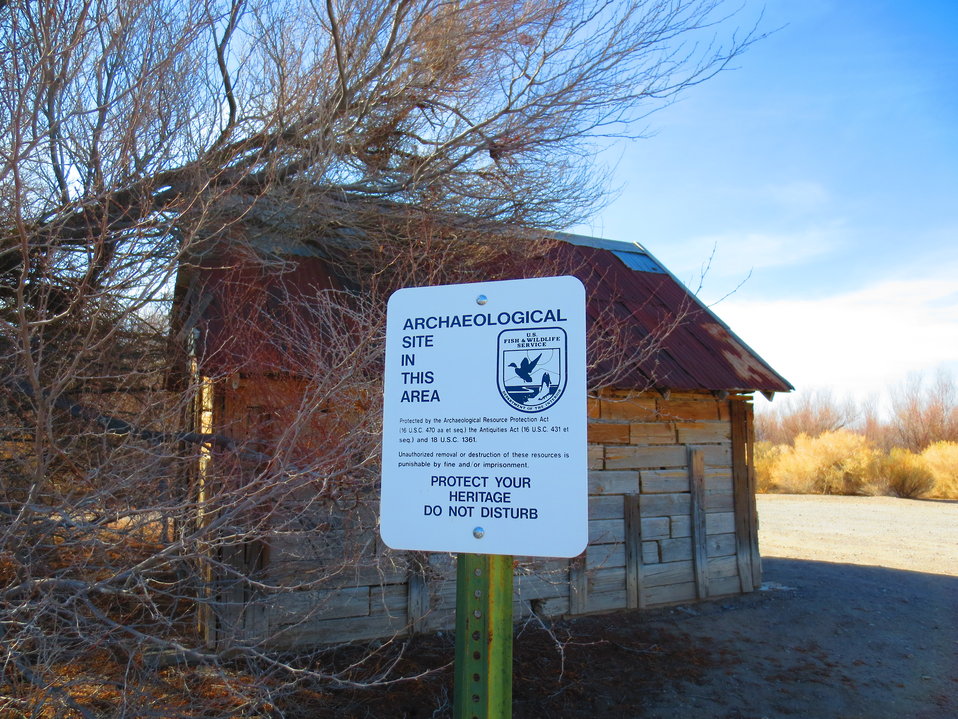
Old Homesteads

Ash Meadows NWR contains several old structures that belonged to farmers, ranchers and miners that once lived in the area.